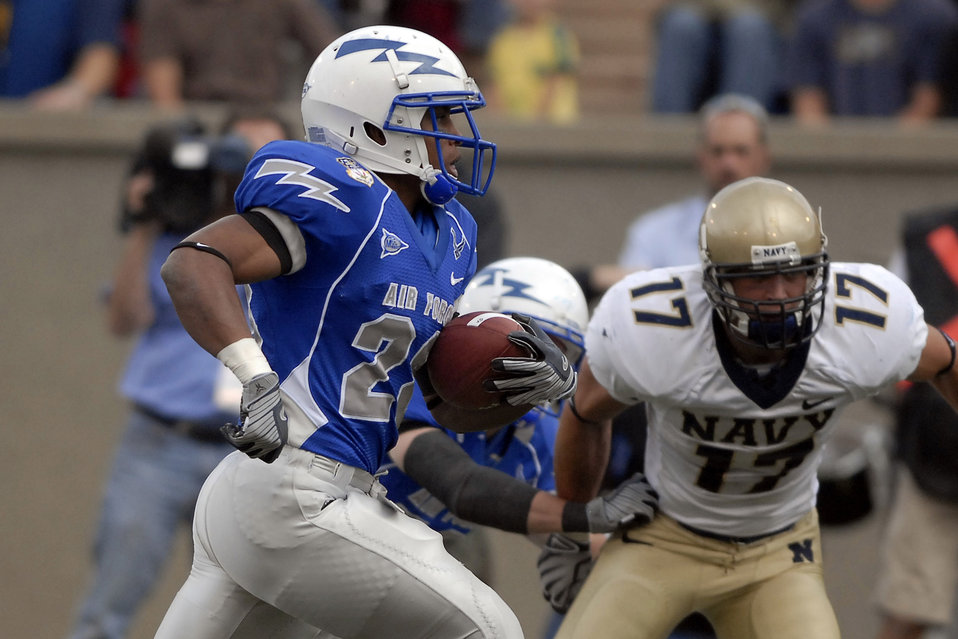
Football: Navy holds off Falcons

U.S. Air Force Academy sophomore tailback Kyle Lumpkin gains yardage as Navy beat the Falcons for the 6th consecutive time, 33-27 at the Academy in Colorado Oct. 4.